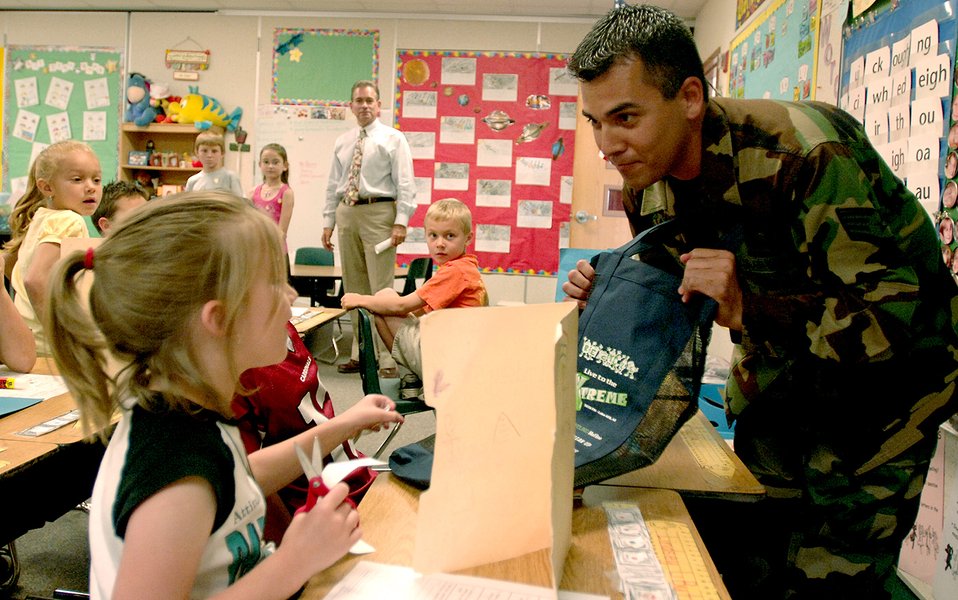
Luke Airmen share environmental innovation

Staff Sgt. Milo Munoz hands out recycling bags to children at Palm Valley Elementary School in Phoenix, Ariz., on Thursday, April 20, 2006. Sergeant Munoz, a crew chief with the 308th Aircraft Maintenance Unit at nearby Luke Air Force Base, volunteers to help promote Air Force environmental programs.